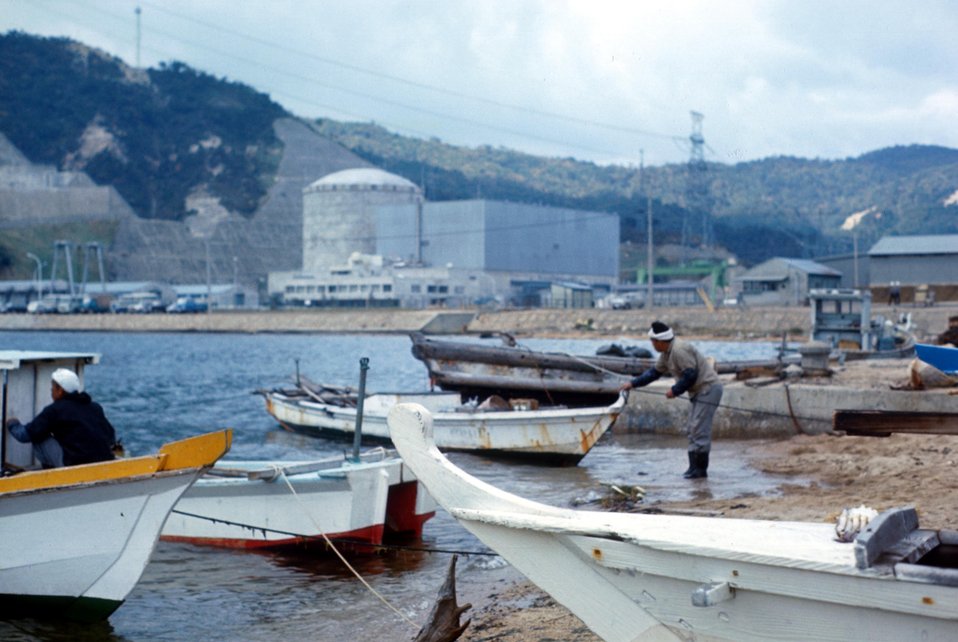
Japan - Tsuruga Plant - Japco Nuclear Reactor. c. 1970